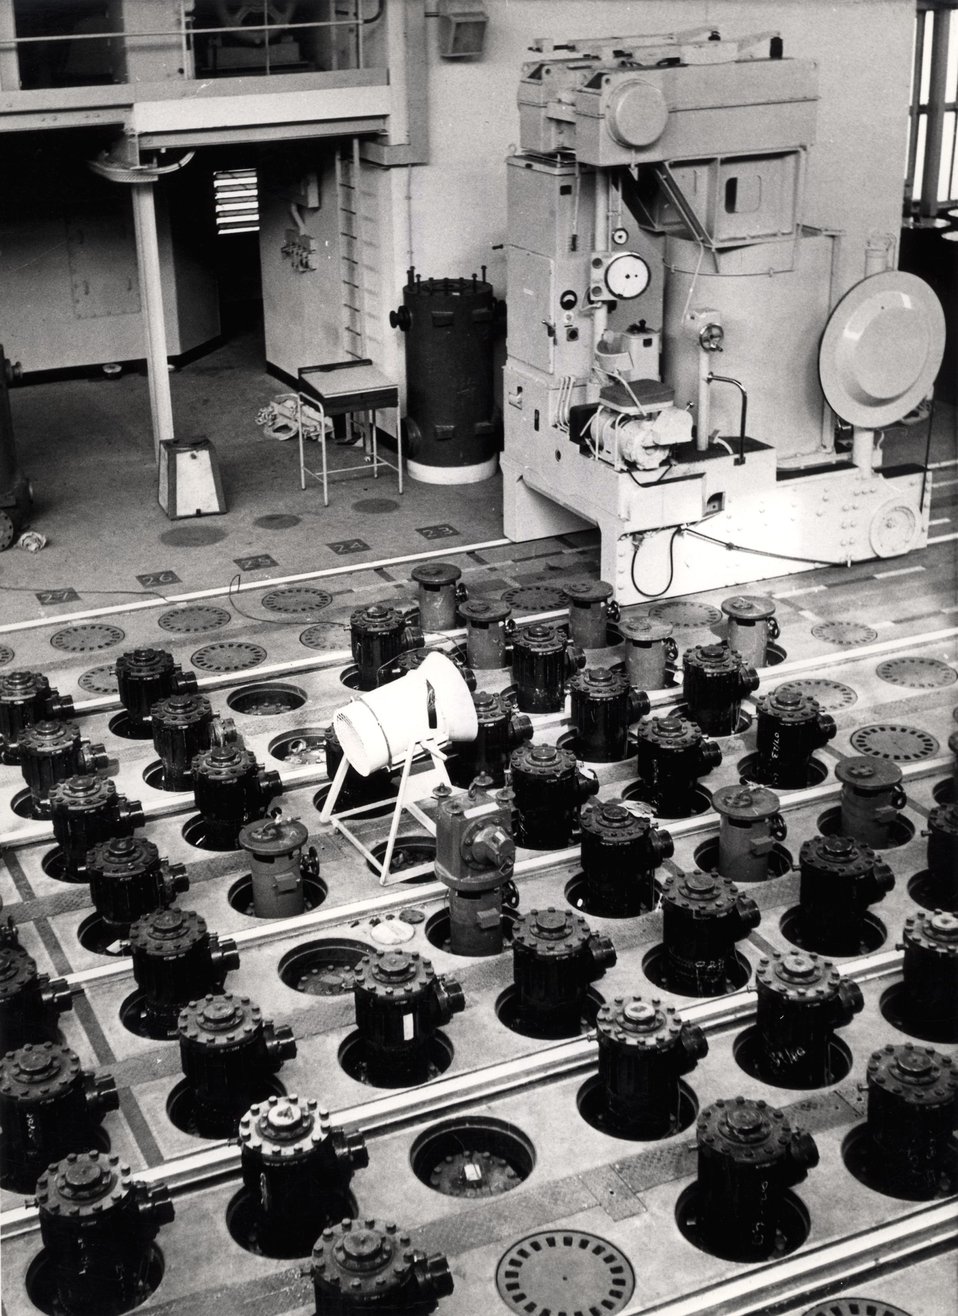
Britain's First Atomic Power Station, Calder Hall. The general view of the charging deck of No. 1 reactor, Calder Hall A power station. c. 1956